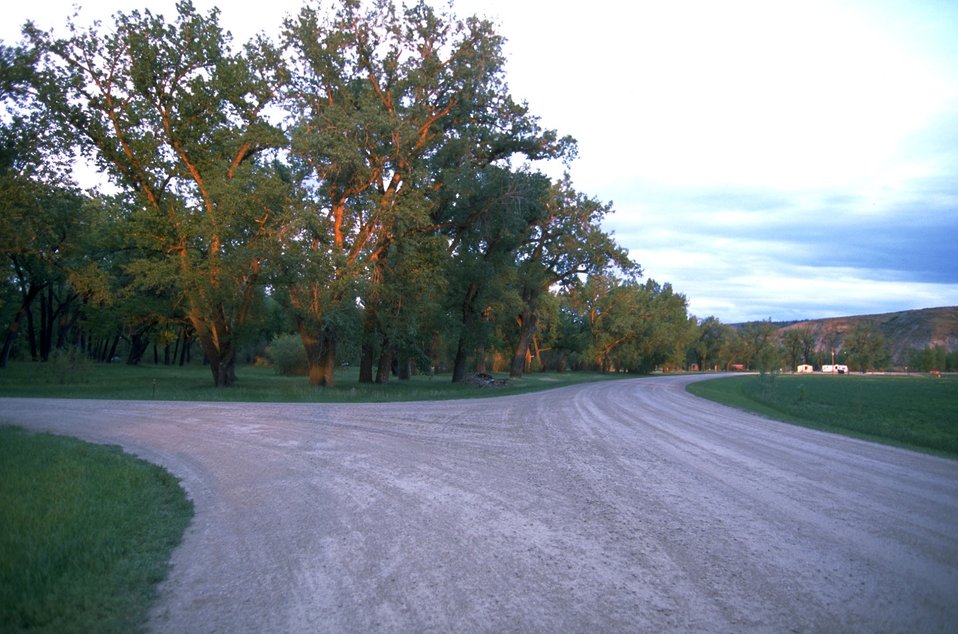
Sun shining on trees at the intersection of two gravel roads